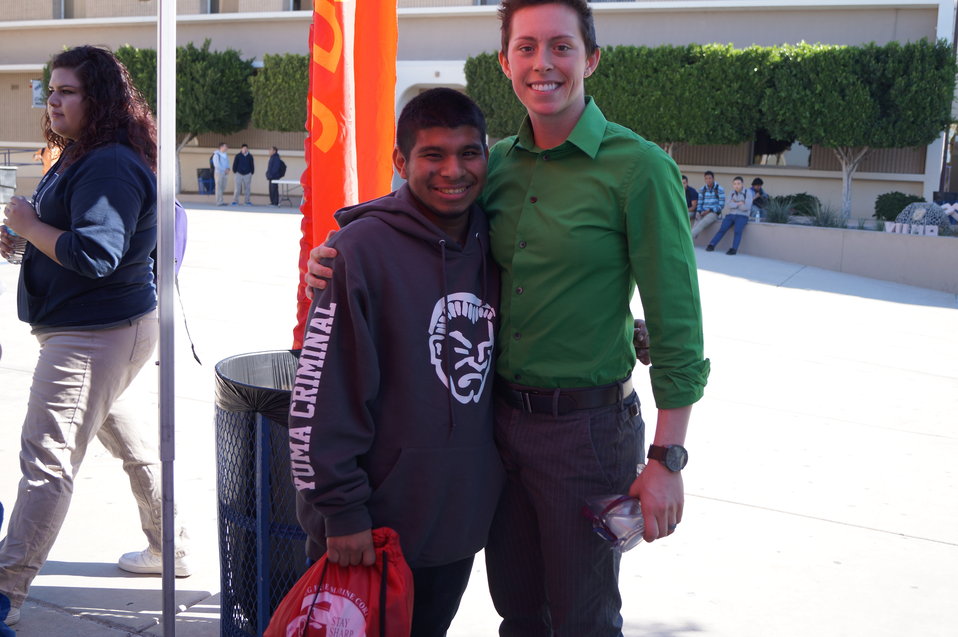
National Drug Facts Week - YUMA HIGH

The Drug Demand Reduction Program out of Yuma Arizona held numerous events at local schools to support NIDA's National Drug Facts Week, Jan. 27-Feb. 2 2014. Teens participated in drug awareness games, and helped to Shatter the Myths about teen substance abuse.